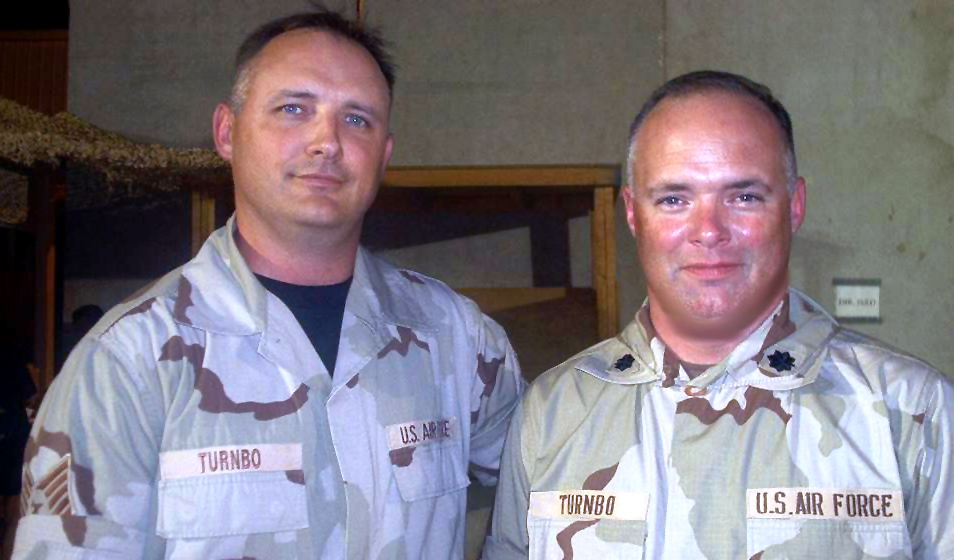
Turnbos

AL UDEID AIR BASE, Qatar -- Tech. Sgt. Robert Turnbo stands with his cousin, Lt. Col. Kevin Turnbo, after the two met while deployed here. The two realized they were relatives after the sergeant received family history documents from his wife in the United States. Both airmen are assigned to the U.S. Central Air Forces Combined Air Operations Center here.